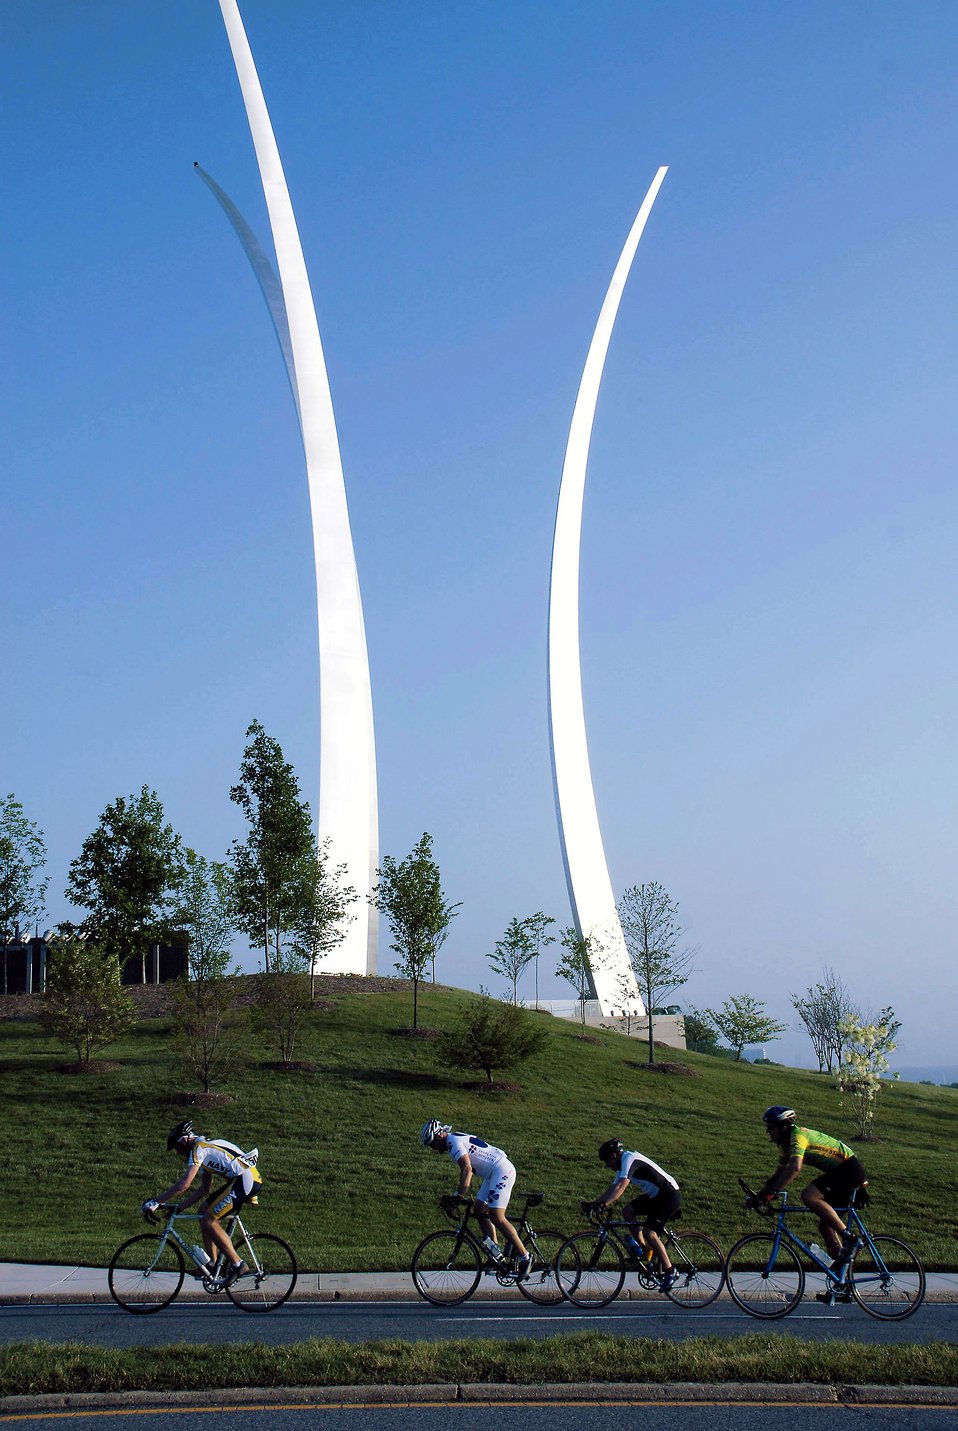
Air Force participates in pro cycling event

Cyclists ride past the Air Force Memorial on a 12.5 kilometer course during the U.S. Air Force Cycling Classic held May 4 in Arlington, Va. Proceeds from the event, which featured both amateur and professional cyclists, will benefit U.S. military members who suffer from traumatic brain injuries.